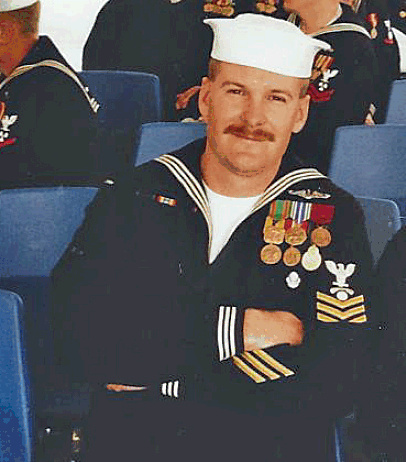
Ronald Cross -- Mountain-Prairie Region

Ronald Cross, PhD, served 21 years in the U.S. Navy, the majority of his service time with the Submarine Community (Bubblehead). While serving in Sardinia, Italy, he received a BA in Technical Communications from the University of Maryland’s European Branch. He later graduated with an MA in International Studies and a PhD in General Business. With the Wildlife and Sport Fish Restoration Program, he is the TRACS Training Specialist at the Rocky Mountain Arsenal National Wildlife Refuge in Commerce City, Colorado. He says: “What gets me most excited about coming to work is task coordinating the next training. I enjoy looking up the next new training location and planning all the logistics. Basically, I am setting up my next adventure.”